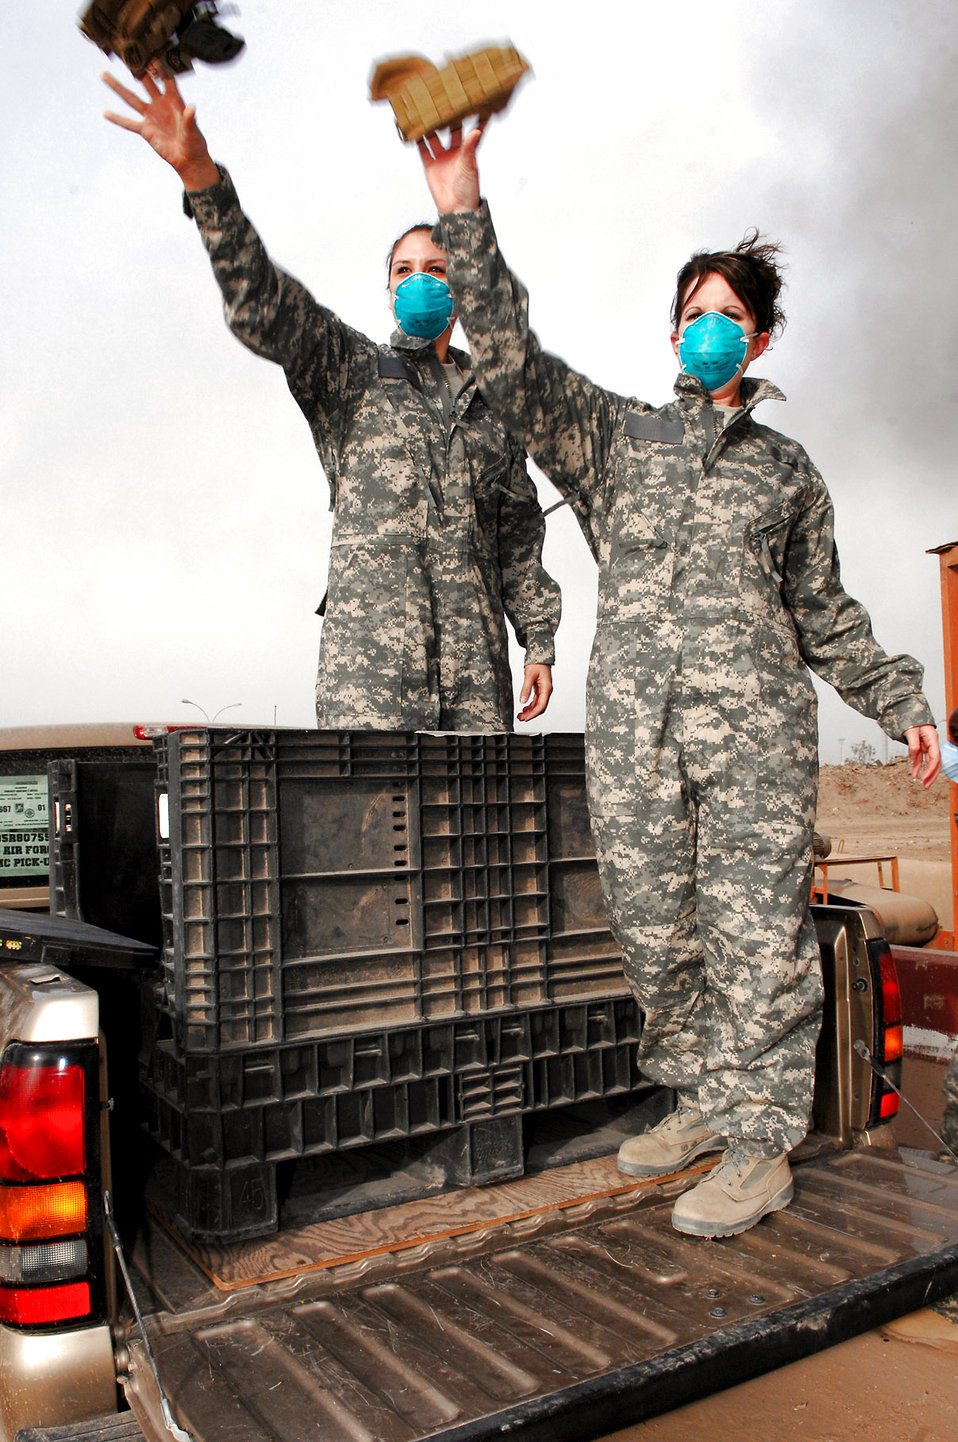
Into the fire

Senior Airman Frances Gavalis and Staff Sgt. Candice Zalewski toss unserviceable uniform items into a burn pit March 10 at Balad Air Base, Iraq. Burning uniform items is done to ensure opposing forces do not obtain them. Airman Gavalis is deployed from Kirtland Air Force Base, N.M., and Sergeant Zalewski is deployed from Luke AFB, Ariz. Both are 332nd Expeditionary Logistics Readiness Squadron equipment managers.